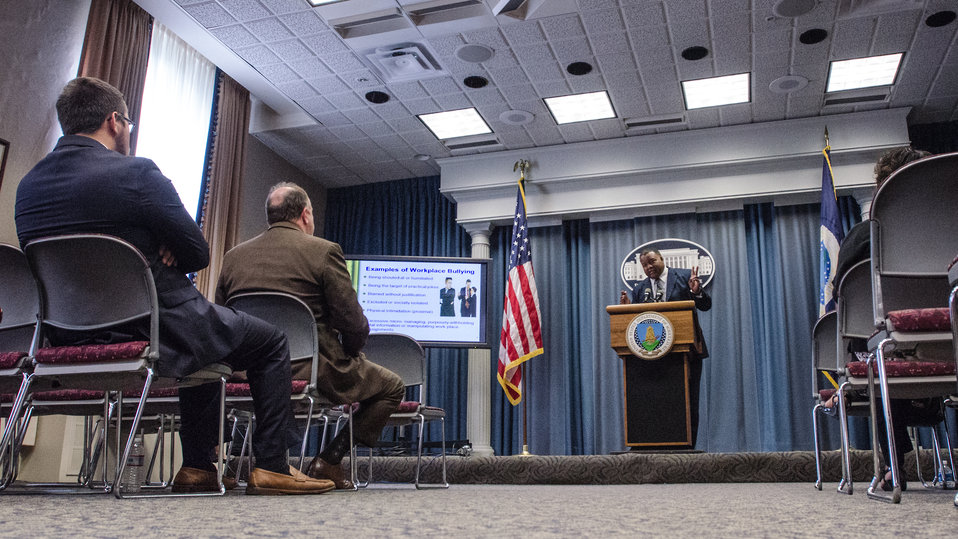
Bureau of Engraving and Printing Alternative Dispute Resolution Steering Committee member and mediator Leonardo Rowe leads the forum on Workplace Bullying during the U.S. Department of Agriculture (USDA) Rural Development’s (RD) 2nd Annual Cultural Transformation kickoff opening ceremony and forums, themed “Employees Influencing Change,” on Tuesday, Aug. 13, 2013 at USDA in Washington, D.C.